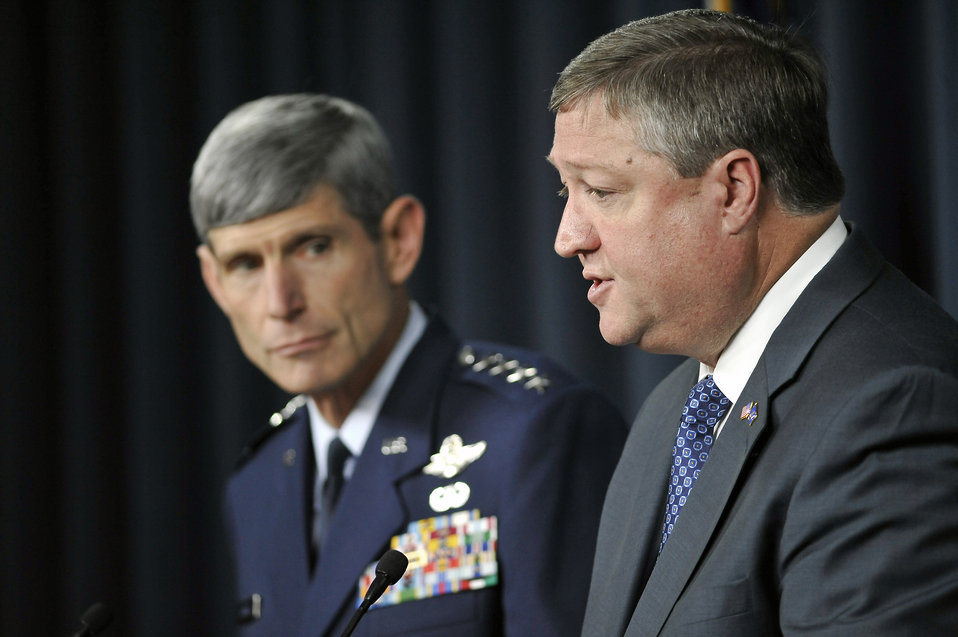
Air Force Accountability

Acting Secretary of the Air Force Michael B. Donley and Air Force Chief of Staff Gen. Norton A. Schwartz speak to members of the press on matters of accountability with regard to nuclear assurance from the Pentagon Sept. 25. The press conference outlined actions taken by the Air Force in response to the Donald Report.